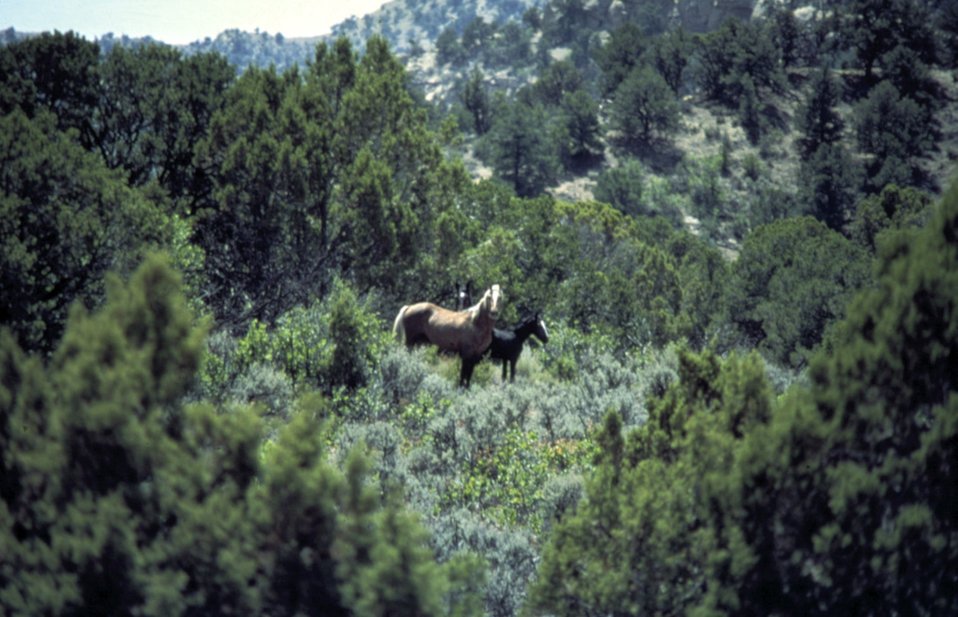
Wild Horses